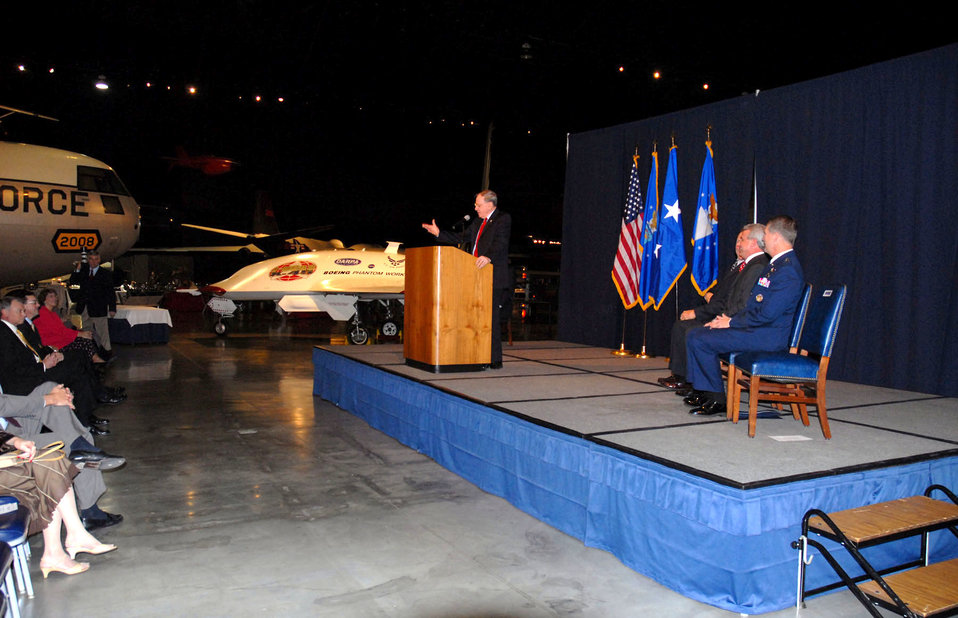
X-45A Ceremony

The Boeing X-45A unmanned combat air vehicle was officially inducted into the National Museum of the United States Air Force collection during a special ceremony on Nov. 13, 2006. Here, retired Maj. Gen. Charles D. Metcalf, museum director, addresses the audience.